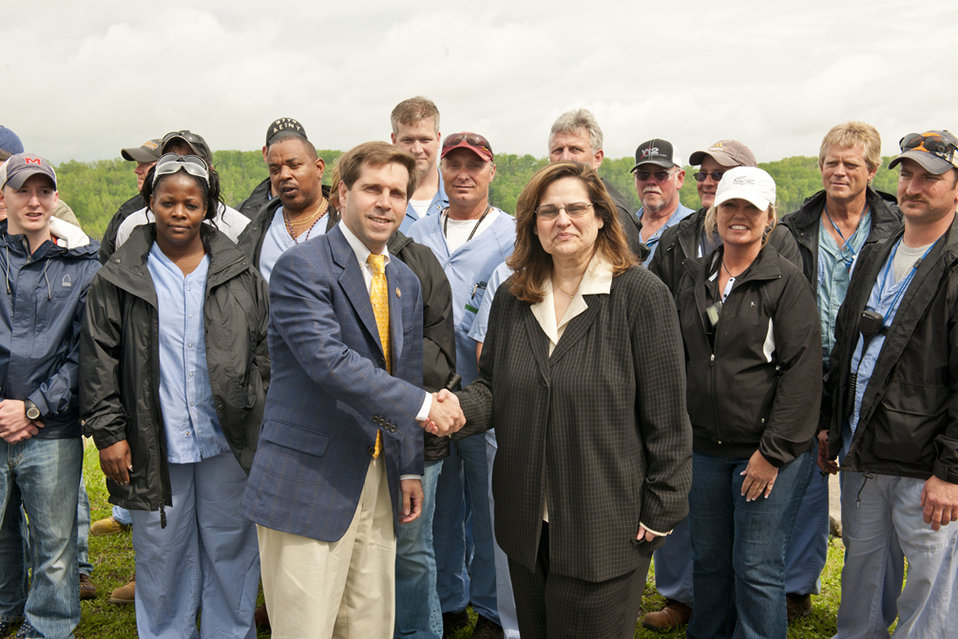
Y-12 Visit

Congressman Chuck Fleischmann, left, and DOE Assistant Secretary for Environmental Management Inés Triay thanked workers from Environmental Management projects at the Y-12 National Security Complex. During a visit Wednesday, April 20, about two dozen workers met Fleischmann and Triay atop Chestnut Ridge at the site.

In its seven Recovery Act-funded projects, Y-12 has exceeded its goal for small-business procurements, disposed of more than 70,000 cubic meters of waste, created 1,600 jobs and tallied 1.6 million work hours with no lost days.